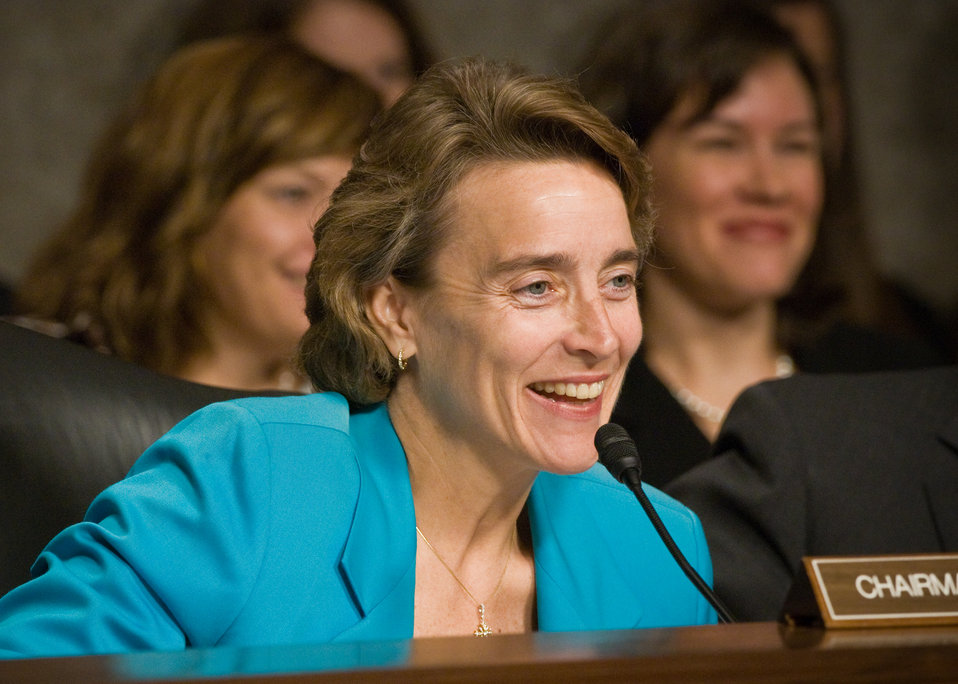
Senator Blanche Lincoln, Chairman, Senate Agriculture Committee opens a hearing on expanding our food and fiber supply through a strong U.S. farm policy, in the Dirksen Senate Office Building, in Washington, DC, on Wednesday, June 30, 2010. Senator Lincoln mentioned, “This is the first in a series of hearings to help this committee prepare for the next farm bill. We will be taking an inventory of what we have and ensuring that it is working properly, but doing so with our eye on the future of farm policy.” USDA Photo 10di1424-027.